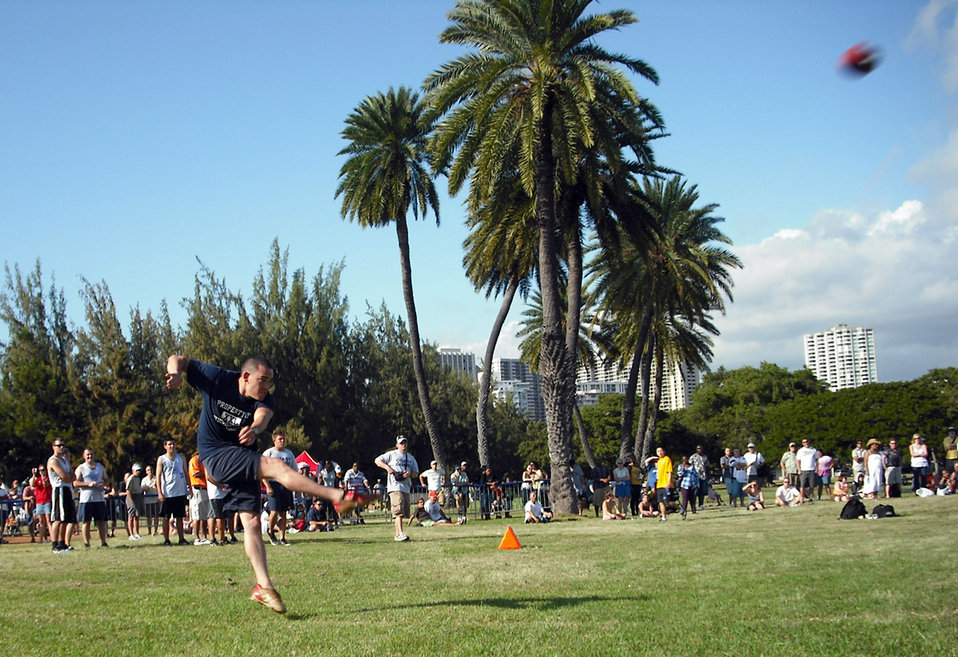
NFL Military Challenge

Senior airman Nathan Angel booms a 37-yard punt during the NFL Military Challenge Feb. 7 in Oahu's Kapiolani Park. For the fourth year in a row, the Air Force team defeated all-star teams from the Army, Navy, Marines and Coast Guard.